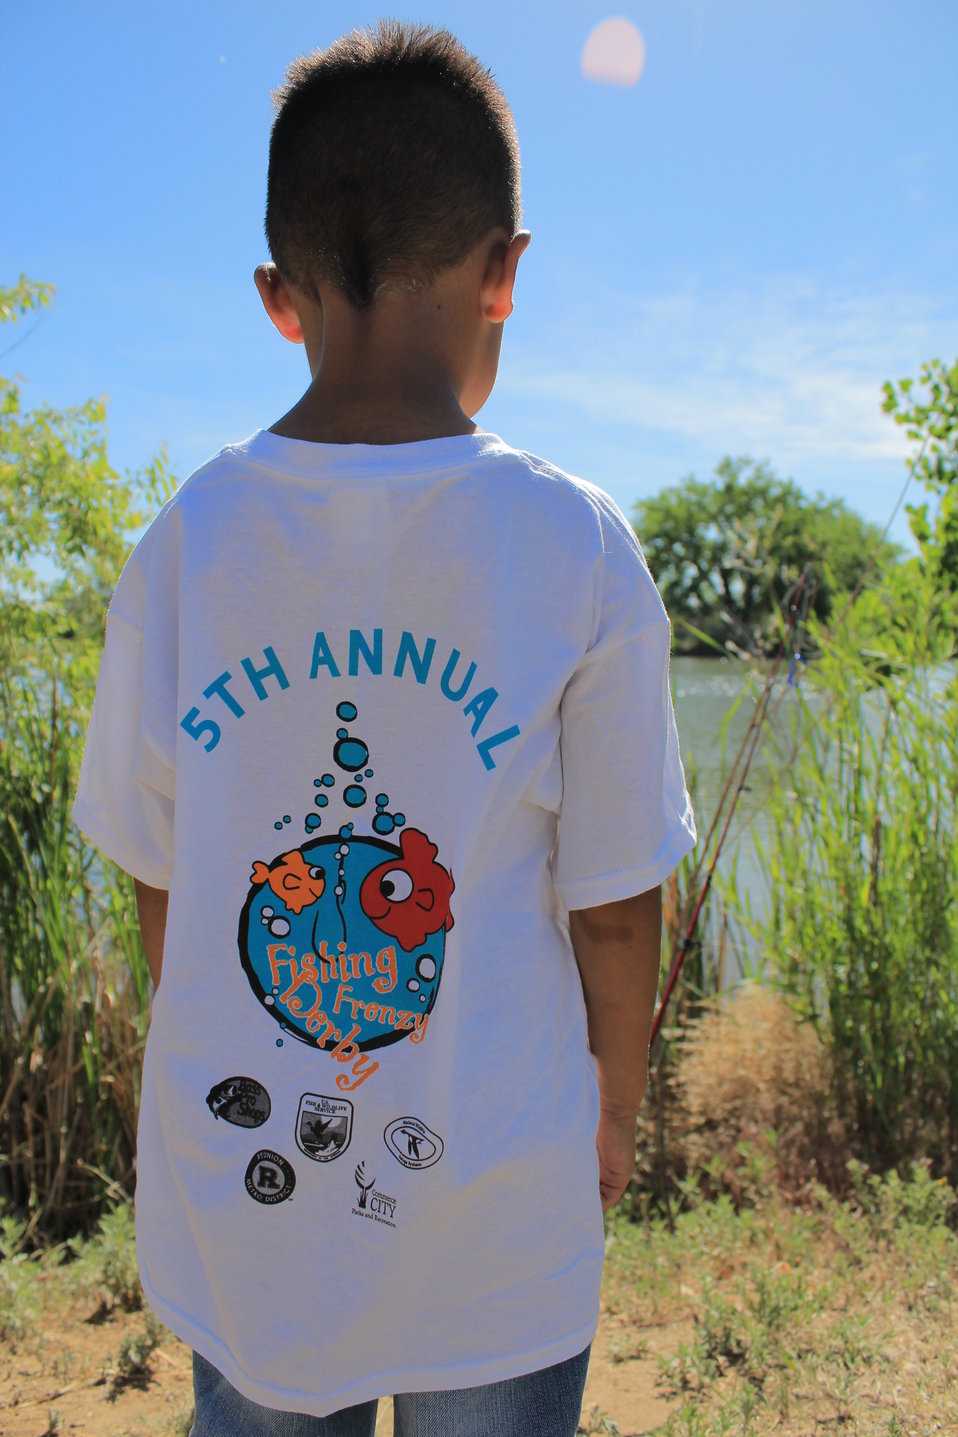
5th Annual Fishing Frenzy

A young angler models the 2012 Fishing Frenzy logo.

Location: Lake Mary, Rocky Mountain Arsenal NWR

Credit: Jaclyn Kircher / USFWS

Photo Contest Entry #31